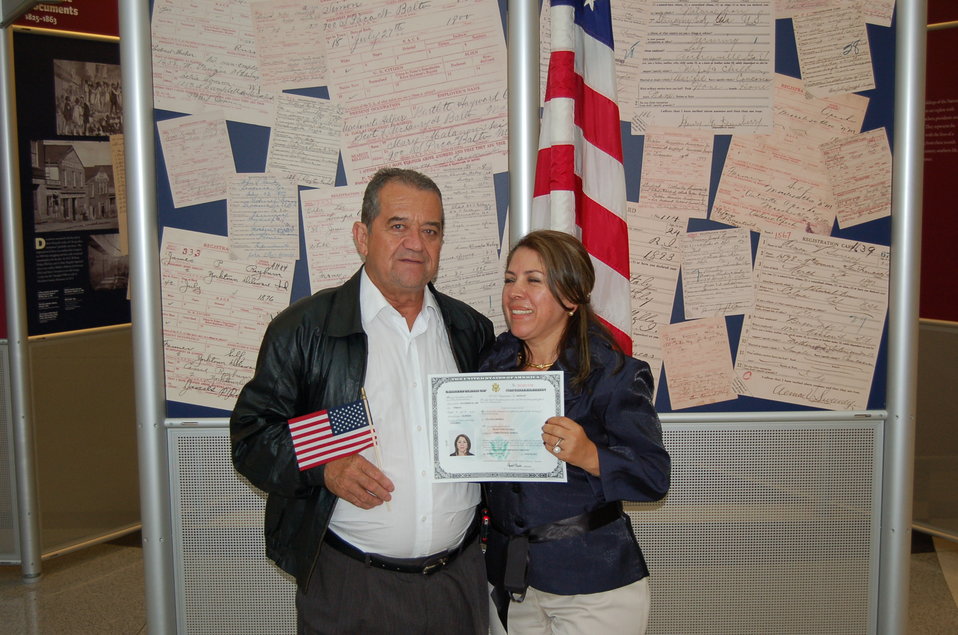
New Citizens